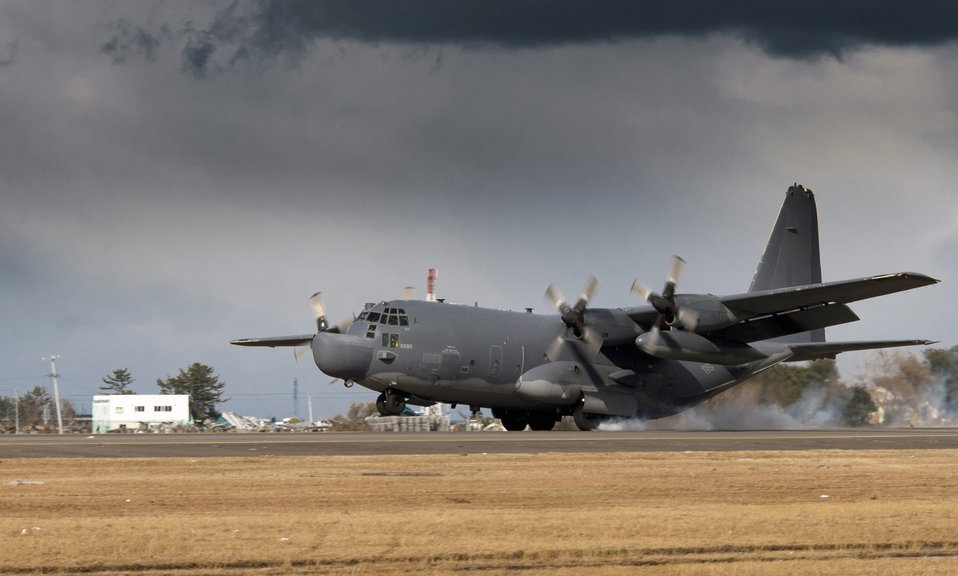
First fixed-wing aircraft since quake lands at Sendai Airport

A U.S. Air Force MC-130H Combat Talon II lands at Sendai Airport, Japan on March 16, 2011. This is the first fixed-wing aircraft to land at the airport since an earthquake and tsunami crippled much of the Japanese eastern seaboard March 11. A team of specialists from the 320th Special Tactics Squadron out of Kadena Air Base, along with Japanese emergency management organizations, cleared a section of the runway and re-established control tower capabilities, enabling direct flights in and out of the airfield.